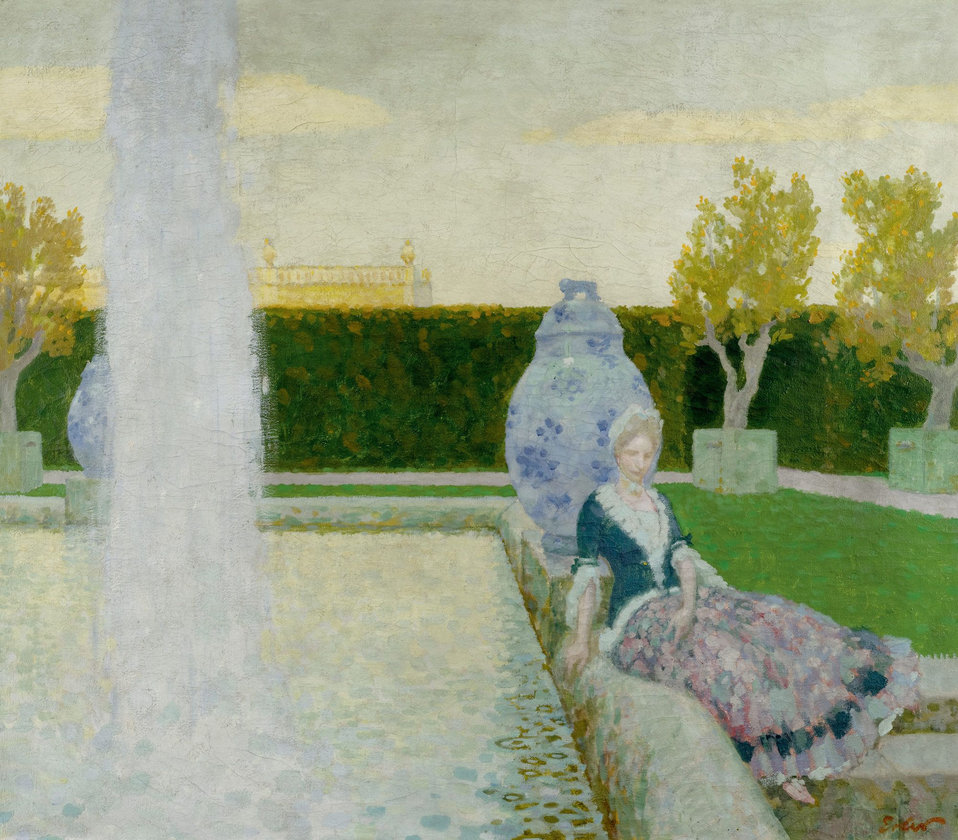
Frau im Park am Brunnen. Öl auf Leinwand. Unten rechts signiert: Erler. 100 x 119 cm.